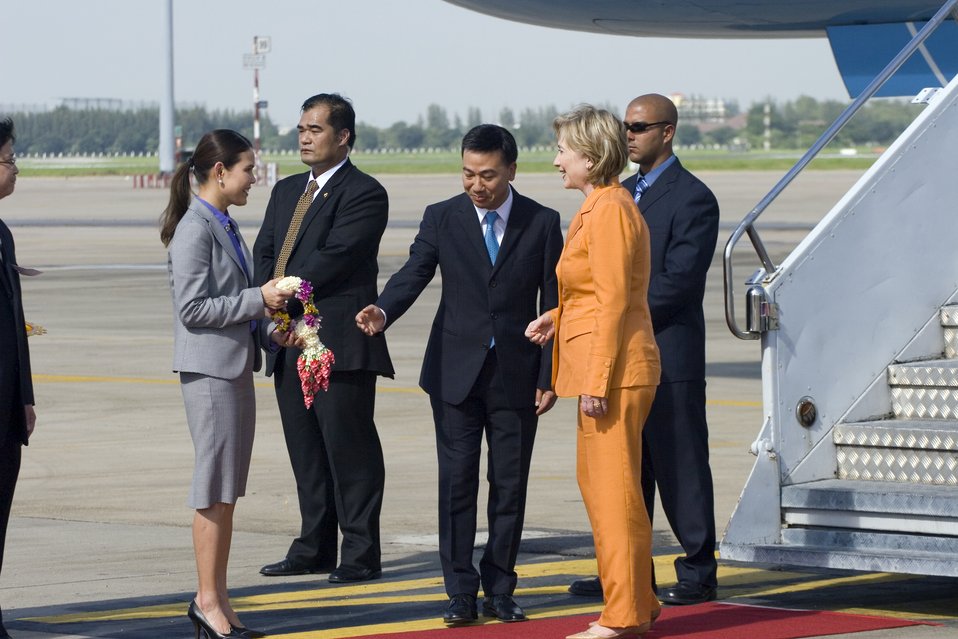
Secretary Clinton Arrives at Bangkok, Thailand

U.S. Secretary of State Hillary Rodham Clinton is greeted by Thailand's Vice Minister of Foreign Affairs Panich Vikitsreth and his wife upon the Secretary's arrival to Bangkok, Thailand July 21, 2009.